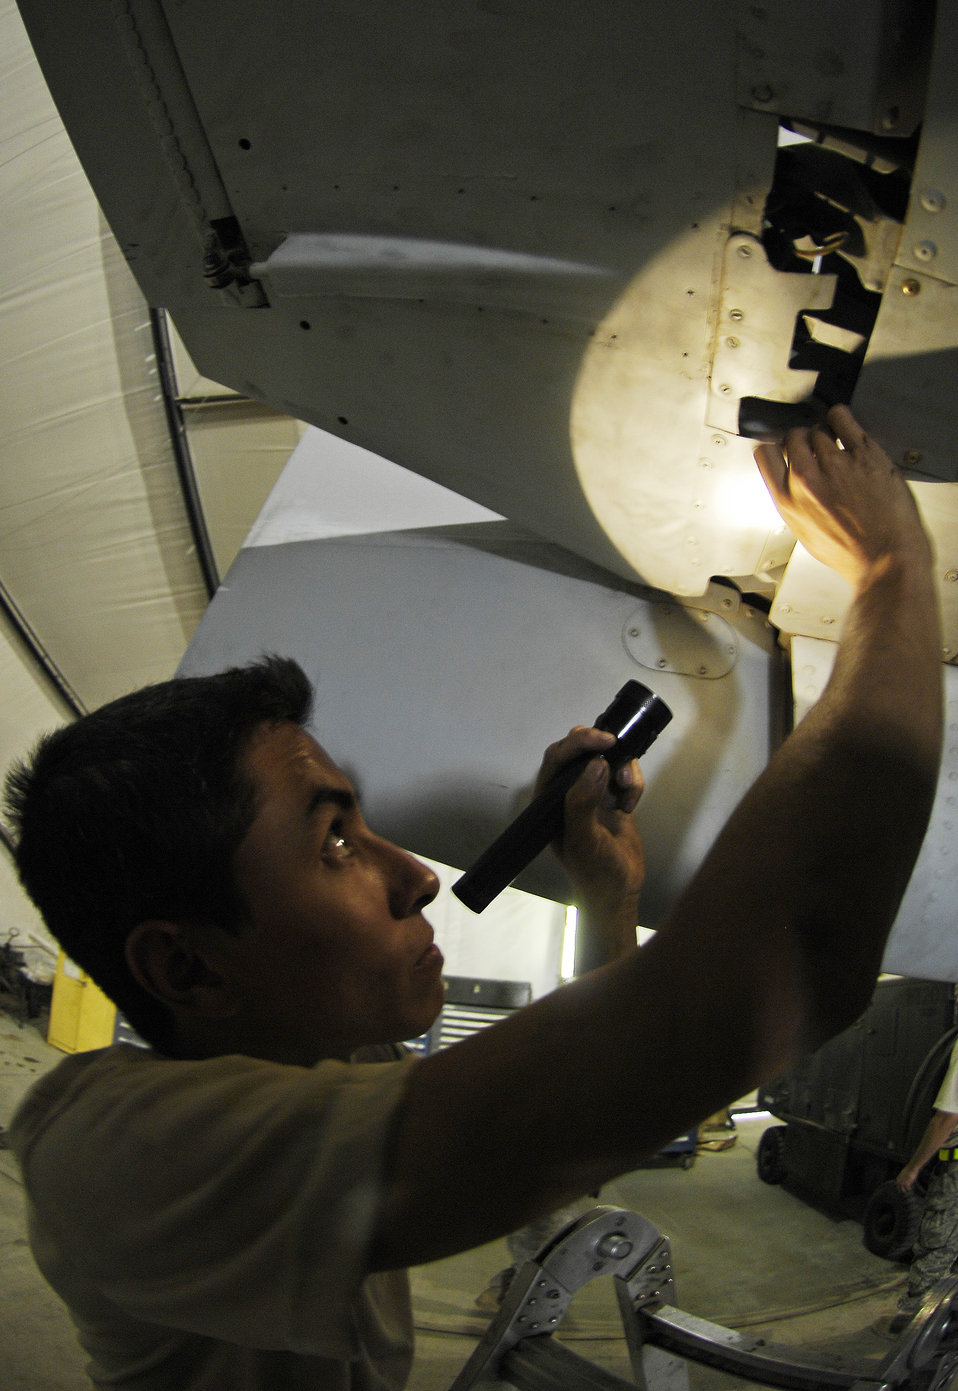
Innovative maintainers save time, lives of front line troops

Airman 1st Class Felipe Madriaga inspects an A-10 Thunderbolt II elevator bushing during a phase inspection July 2 at Bagram Airfield, Afghanistan. Maintainers here implemented a new phase inspection process that cuts maintenance time on the aircraft in half and ensures the aircraft can provide close-air support for ground troops in Afghanistan. Airman Madriaga is a 455th Expeditionary Maintenance Squadron phase inspection technician.